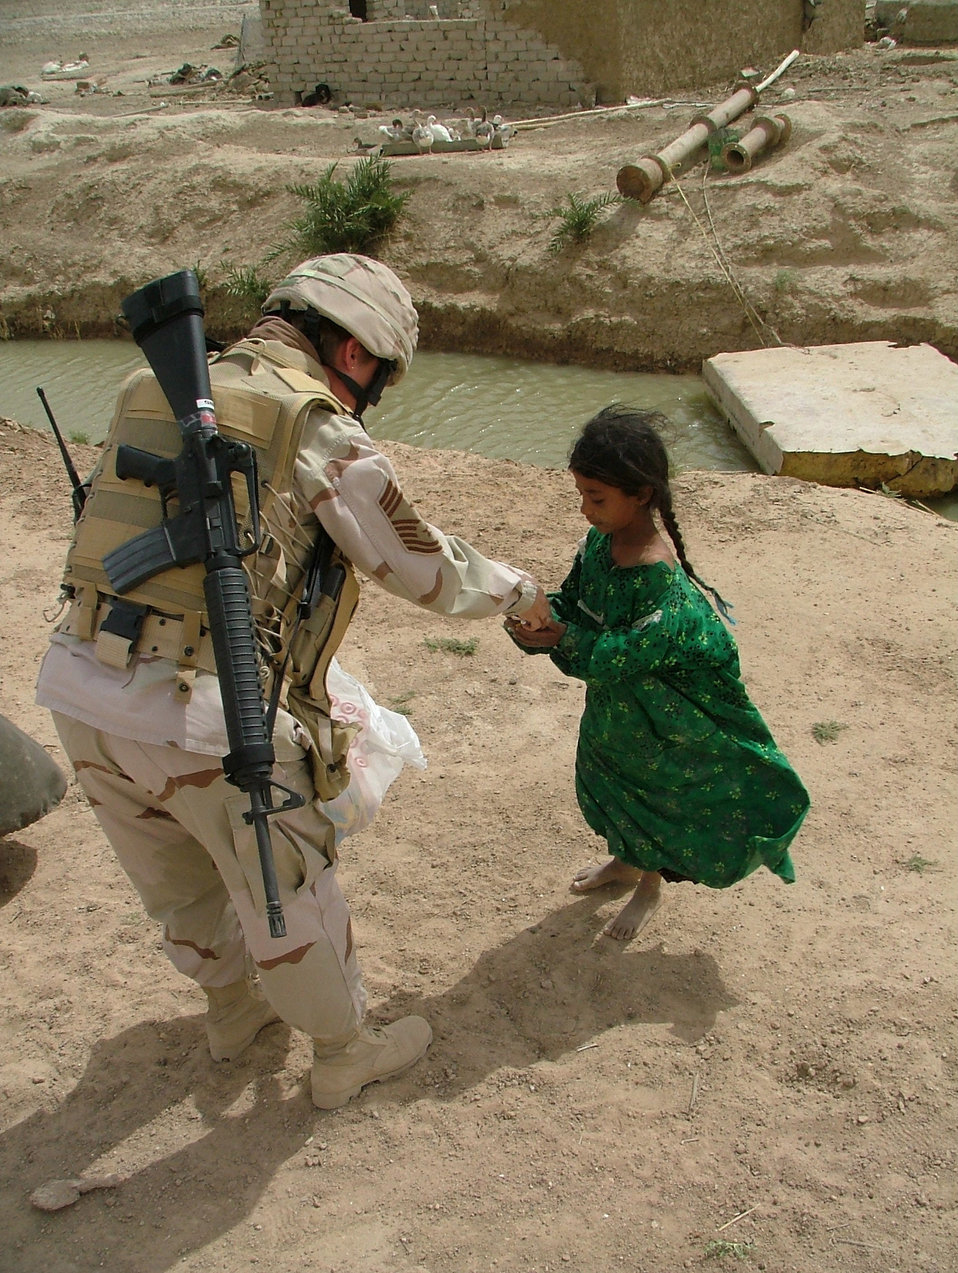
Reaching out

IRAQ -- Chief Master Sgt. Kathyrn Shott hands out candy to a local Iraqi girl during a visit outside the Tallil Air Base perimeter here May 28 in support of Operation Reachout. Operation Reachout is a program started by security forces members here to build a friendship with the surrounding families. Security forces members visit these families on a weekly basis to see how they are doing and bring MREs, water and candy for the children. Chief Shott is a member of the 407th Expeditionary Security Forces Squadron.